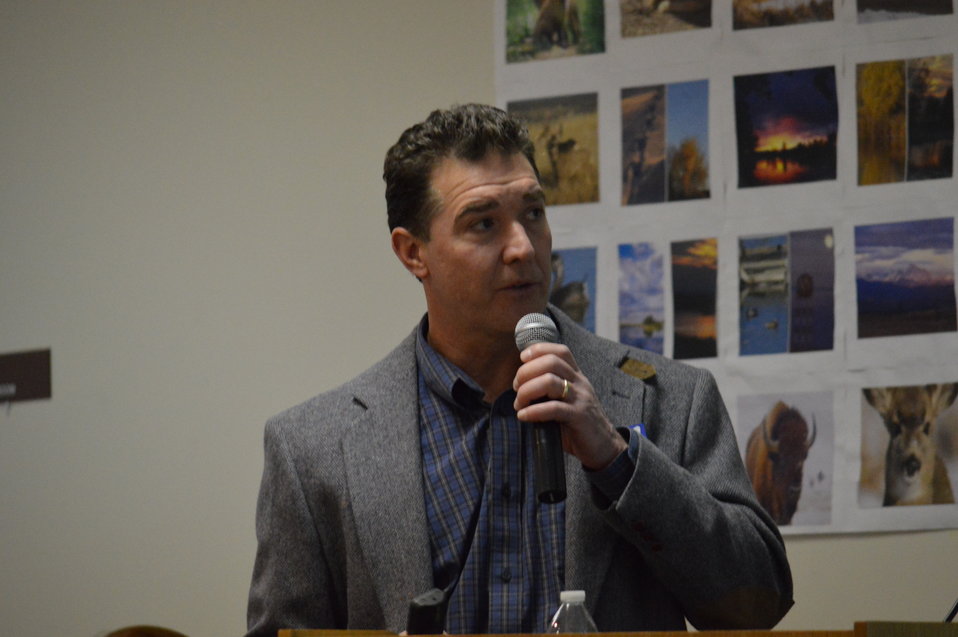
Eagle Summit III

Steve Oberholtzer (Chief of Law Enforcement) starts his presentation at the Eagle Summit III in Denver, Colorado on March 20, 2014 at the Rocky Mountain Arsenal National Wildlife Refuge.